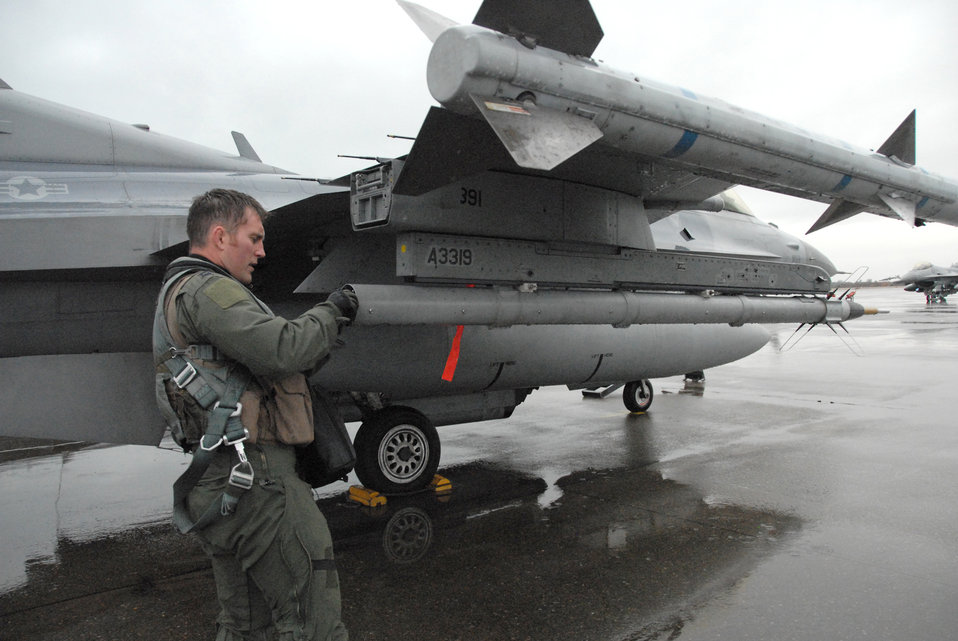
Keen Sword 11 fighter pilots

Capt. Matt Hepp conducts a preflight inspection before a flying mission Dec. 7, 2010, over the Sea of Japan. More than 160 Airmen from Misawa Air Base, Japan, are deployed to Komatsu Japanese Air Self-Defense Force Base, Japan, Dec. 3 to 11 in support of Exercise Keen Sword 2011. Captain Hepp is a 14th Fighter Squadron F-16 Fighting Falcon pilot.